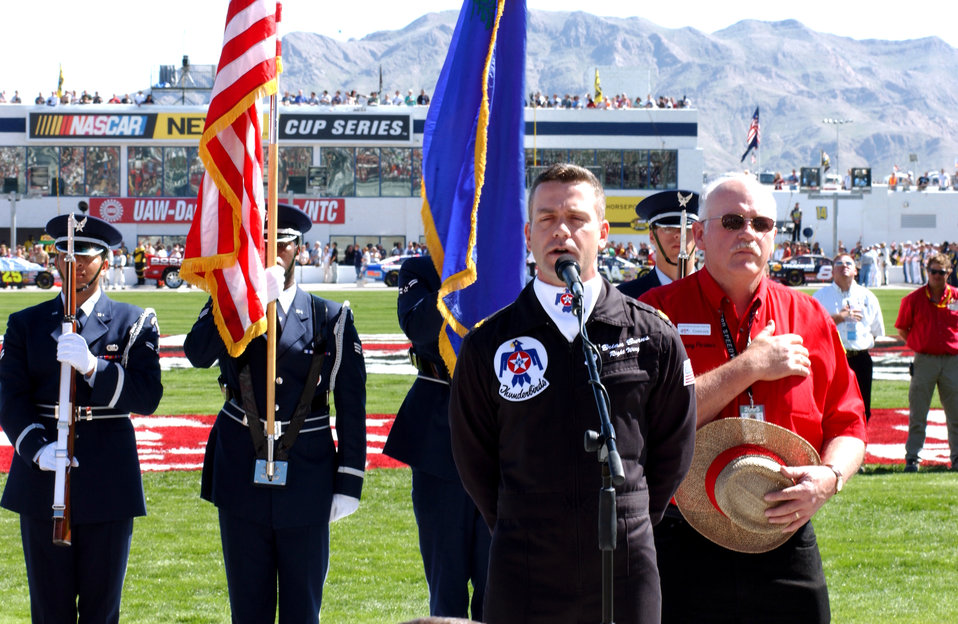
Thunderbirds fly high as NASCAR event

LAS VEGAS -- The Air Force Thunderbird's right wing pilot, Maj. Brian Burns, sings the national anthem at a NASCAR race here March 13.